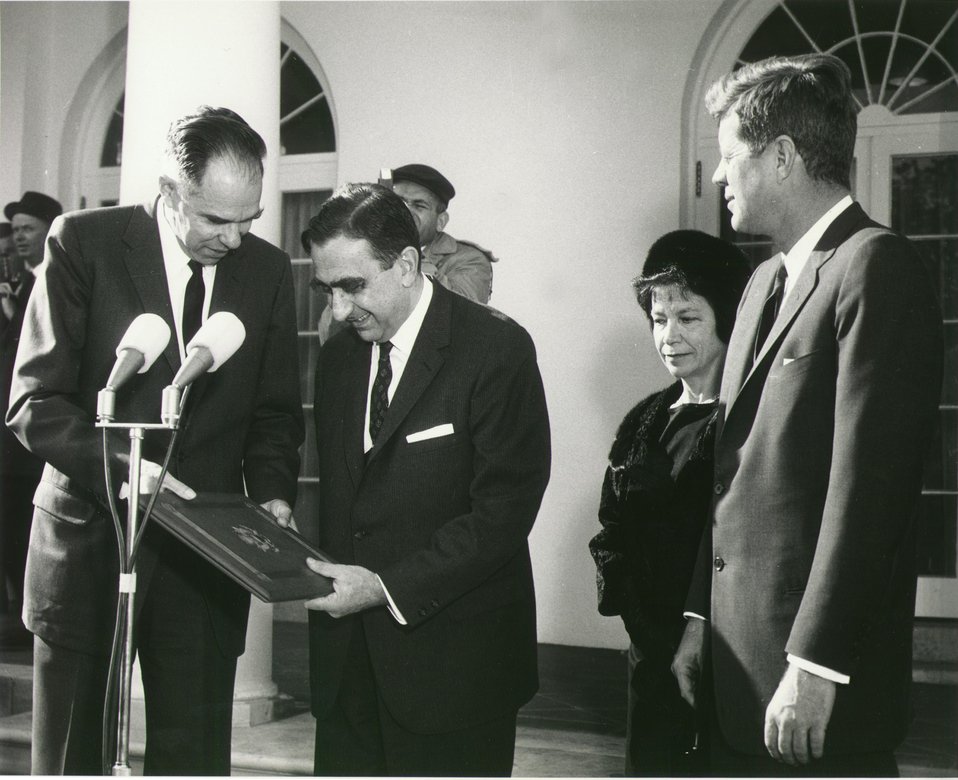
Fermi Award Ceremony for Teller in 1962.